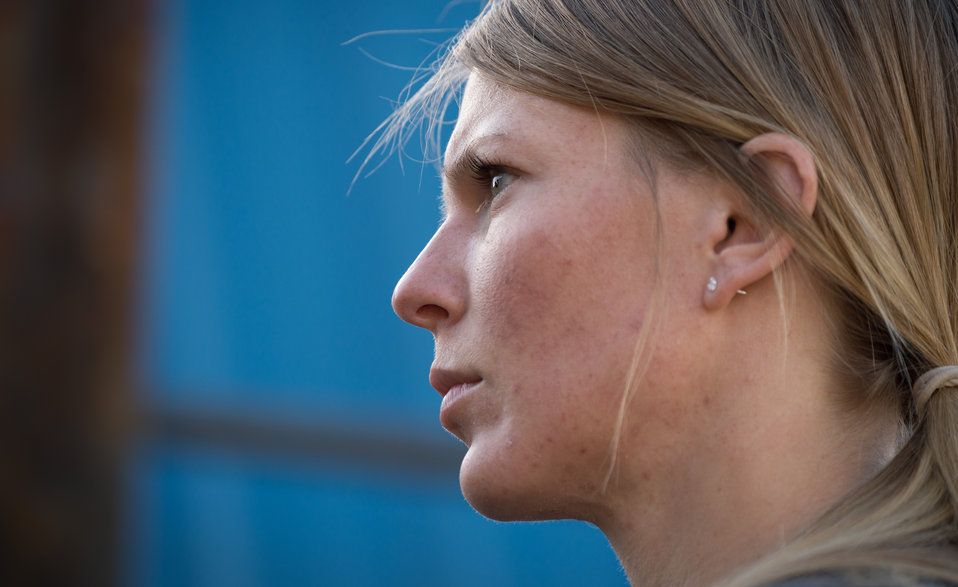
Veteran wildland firefighter Brianna Carollo listens closely to the morning safety briefing at the U.S. Department of Agriculture (USDA) U.S. Forest Service (USFS) National Helicopter Rappel Program’s Rappel Academy at Salmon Air Base in Salmon, ID on Wednesday, May 14, 2014. From May 12, 2014, 72 veteran rappellers from all over the nation, 30 support staff, and three helicopters with flight crews attend the training at Salmon Air Base. Participants will rappel into the Perreau Creek area. The annual training is delivered in accordance with the National Rappel Operations Guide; strengthen leadership, teamwork, and communications within the rappel community, and produces quality aerial delivered firefighters for use in fire and aviation operations. The USDA Forest Service National Helicopter Rappel Program’s primary mission is initial attack. Rappel crews may be utilized for large fire support, all hazard incident operations, and resource management objectives.